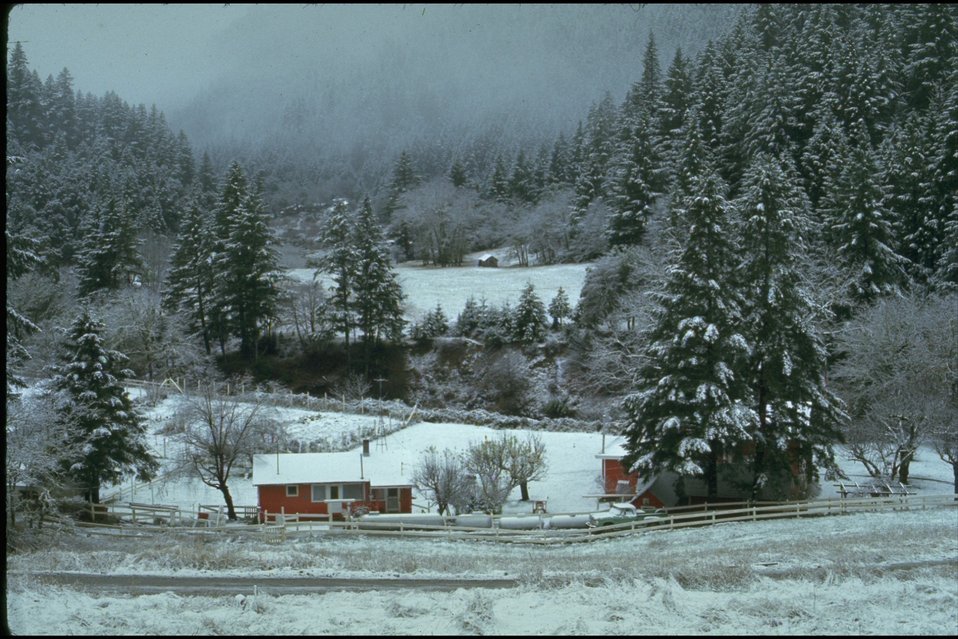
Rogue River Ranch, Mule Creek. Looking toward Mule Creek Caretaker's house.